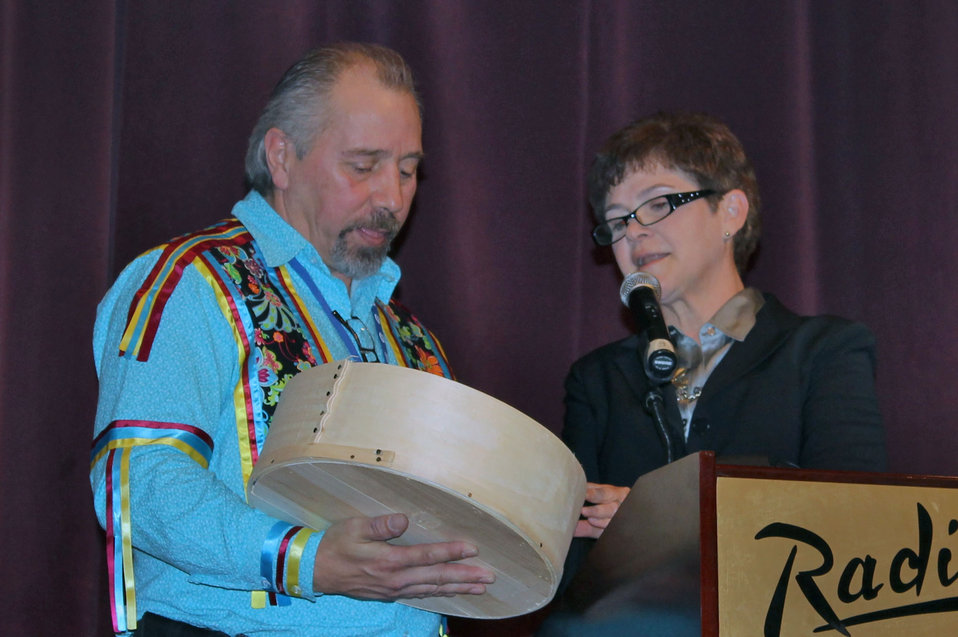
Agriculture Deputy Secretary Krysta Harden meets with Vice-Chair of the Oneida Tribe of Indians of Wisconsin Greg Matson in Green Bay, WI on Tuesday, Apr. 15, 2014.